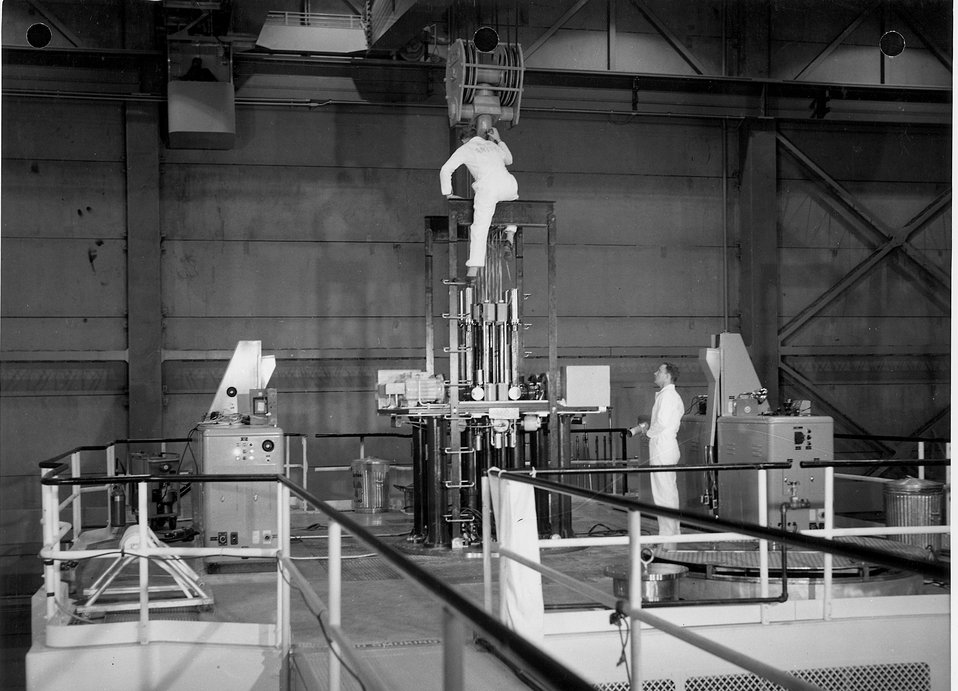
James Dykes attaches crane hook to top plug of Materials Testing Reactor before the plug is removed to the dry dock. Weaver McCaslin, health-physics branch manager, stands by to check plug's radiation level with a 'cutie pie.'